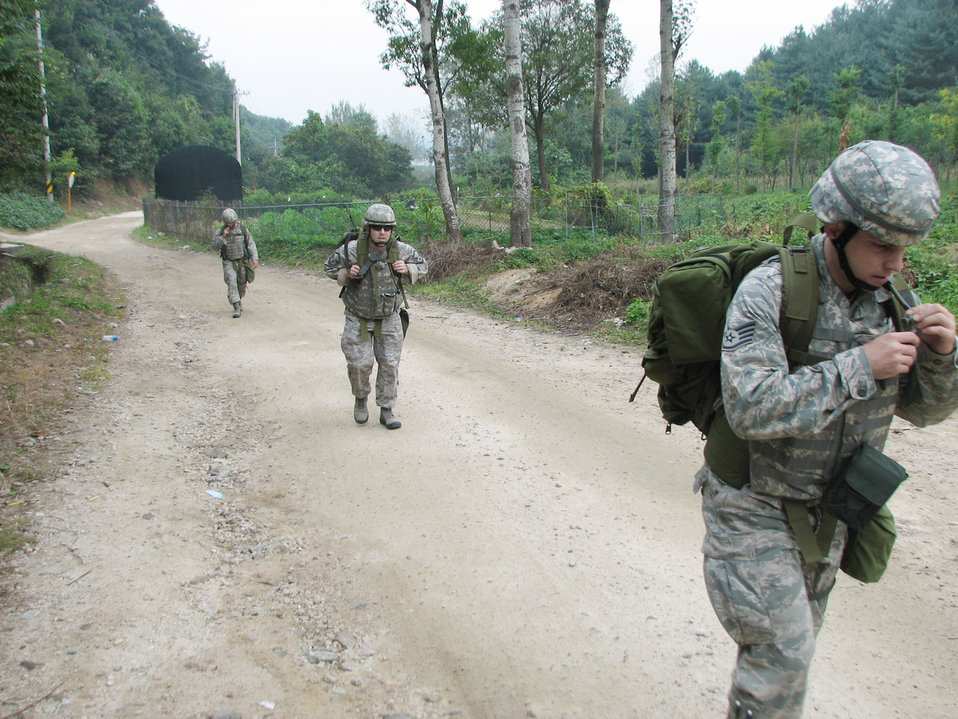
Weather warriors endure 'turbulent climb'

Senior Airman Zach Scott (left to right), Master Sgt. Geoffrey Mason and Staff Sgt. Billy Harris make their way up the hill Dec. 5 near Camp Red Cloud, Republic of Korea during Operation Turbulent Climb. The team members ascended more than 1,000 feet while carrying 65 pounds of gear and covering nearly five miles in distance. The Airmen are assigned to the Det. 1, 607th Weather Squadron.